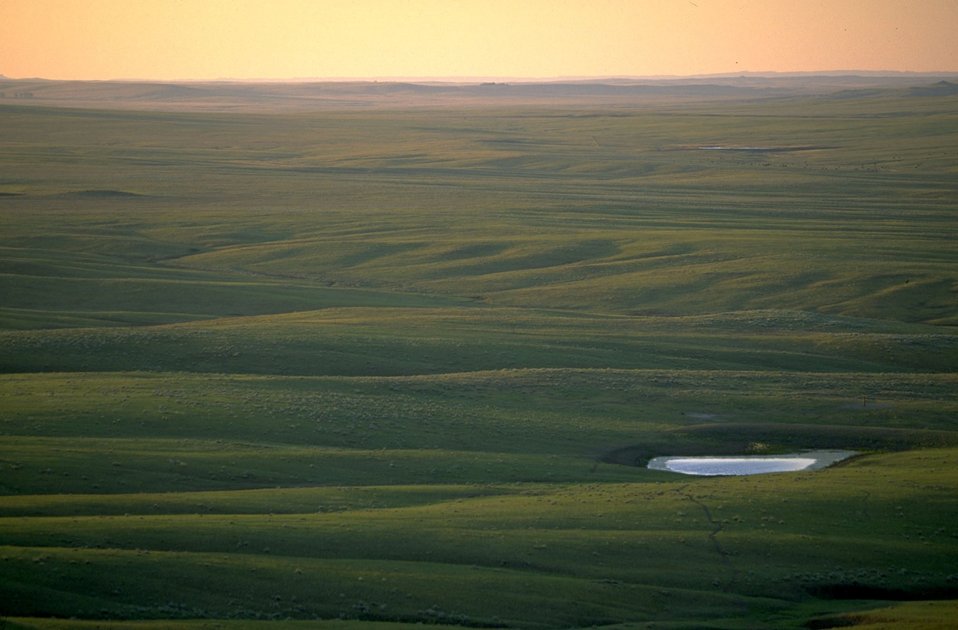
Top of Battle Creek Butte looking West